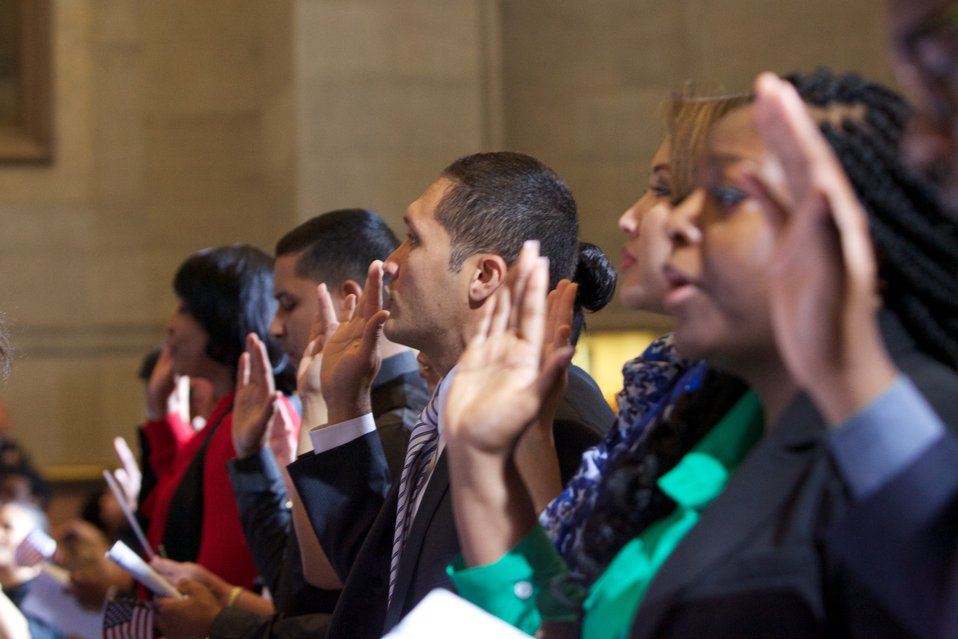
Naturalization Ceremony with Michelle Obama